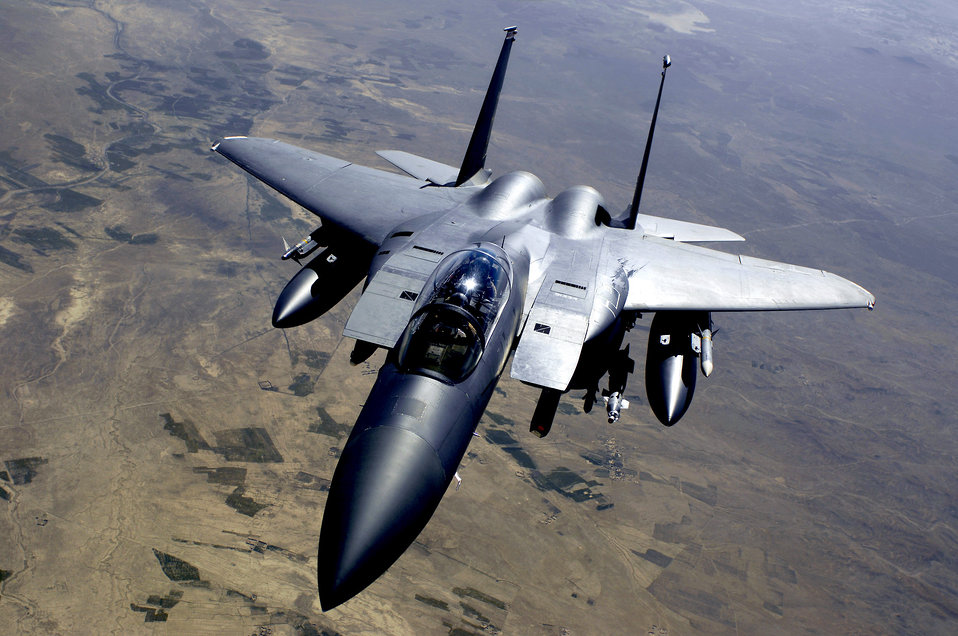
Aug. 7 airpower summary: F-15Es deter enemy activities

An Air Force F-15E Strike Eagle aircraft returns to the fight after receiving fuel. F-15Es continue to be vigilant in deterring enemy activities in Afghanistan.